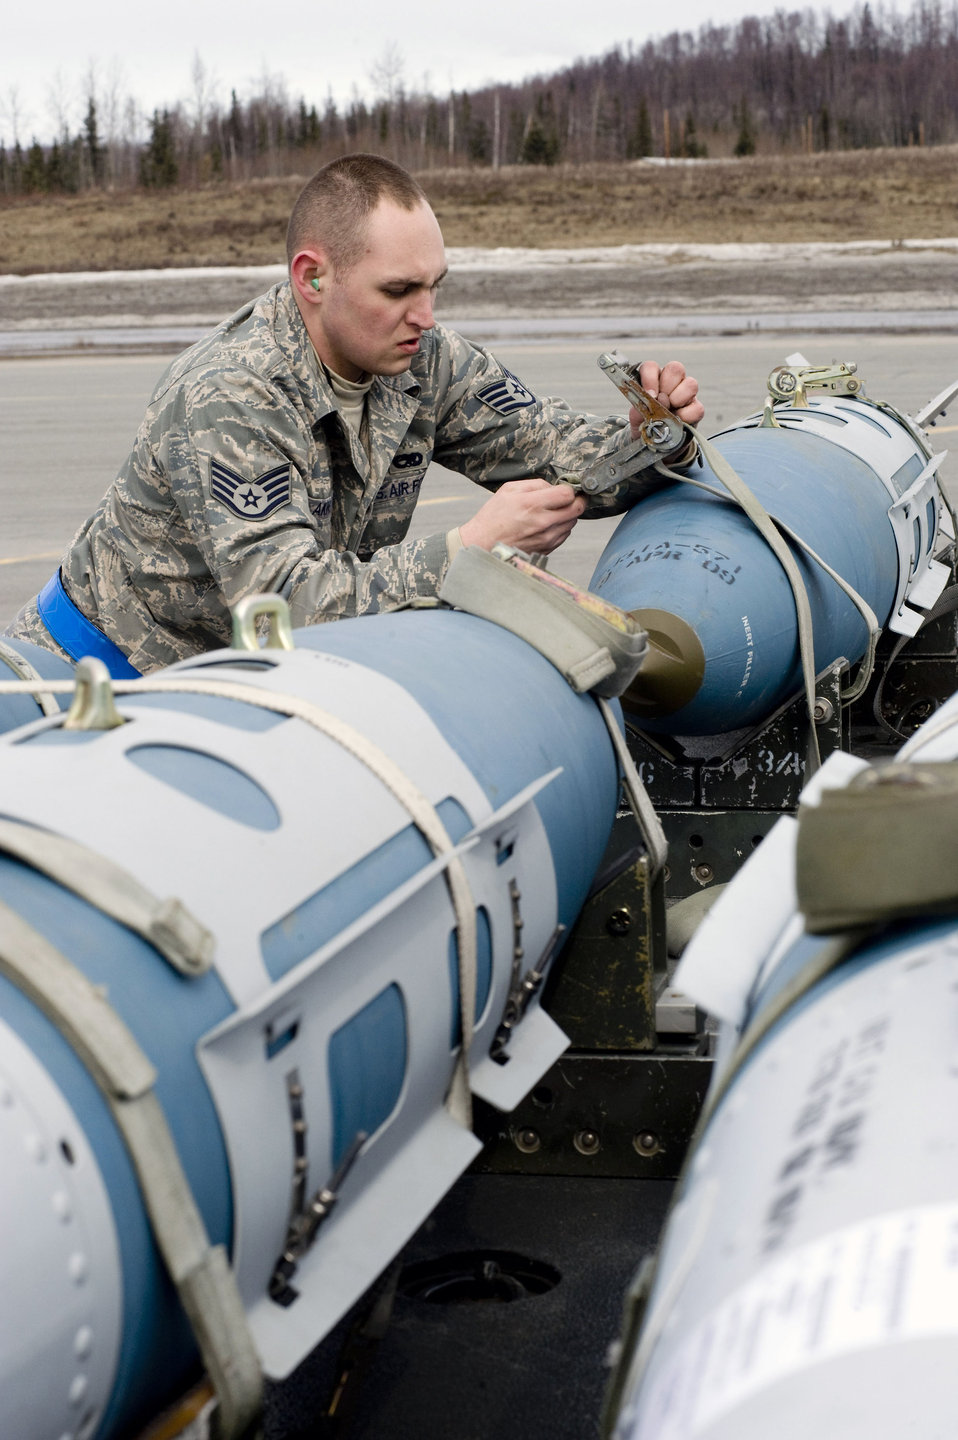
Bombs on target

Staff Sgt. Justin Akins unstraps a Joint Direct Attack Munition that will be loaded onto an F-22 Raptor April 14 at Elmendorf Air Force Base, Alaska. Sergeant Akins is from the 525th Aircraft Maintenance Unit and ensures the JDAM dropped by the 525th Fighter Squadron is successful.